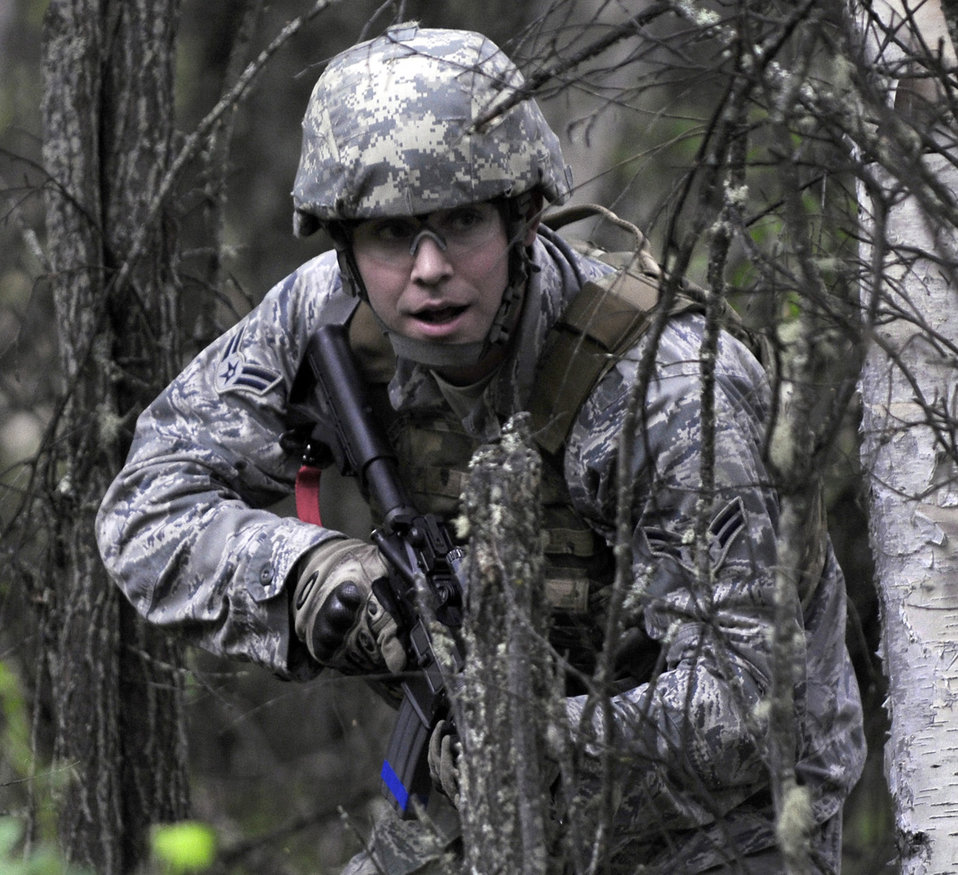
Dismounted patrol preparedness exercise

Airman 1st Class Jordan Burger prepares to